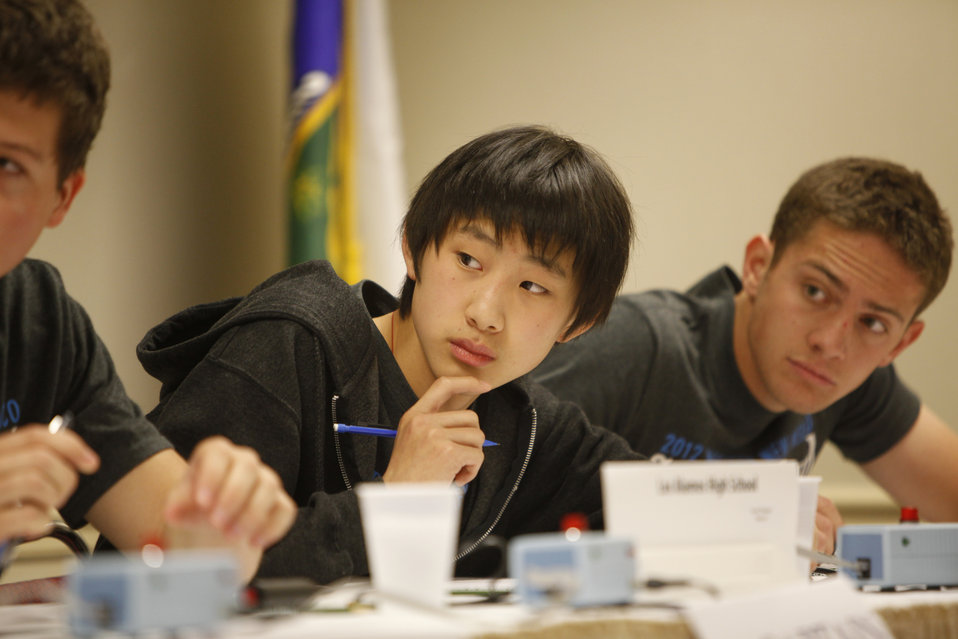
Members of the Los Alamos High School team from Los Alamos, New Mexico concentrate on the answer to a question at the U.S. Department of Energy National Science Bowl in Washington, DC on April 29, 2012.

DOE created the National Science Bowl in 1991 to encourage students to excel in mathematics and sciences and to pursue careers in these fields. The department supports mathematics and science education to help provide a technically trained and diverse workforce for the nation. More than 2000,000 students have participated in the National Sciences Bowl throughout its history.